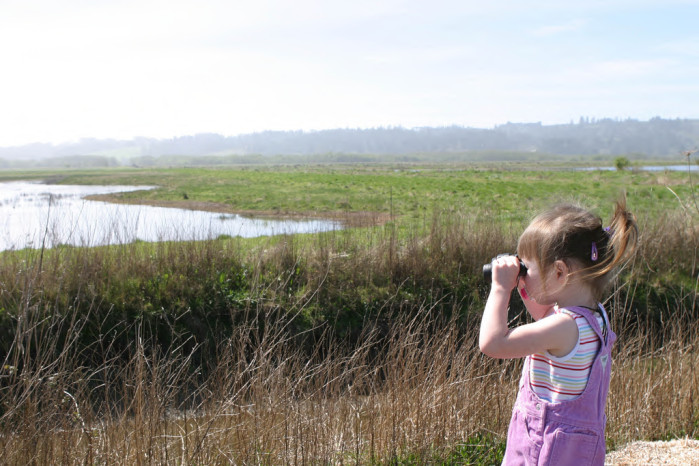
Two-year-old Birder

Humbolt Bay National Wildlife Refuge
(Photo: Shannon Smith, USFWS)

Conserving the Future - In July, 2011, thousands of Service employees, partners of the Service and wildlife enthusiasts gathered in Madison, WI for the 'Conserving the Future' conference that outlined a new, decade-long conservation plan for wildlife.